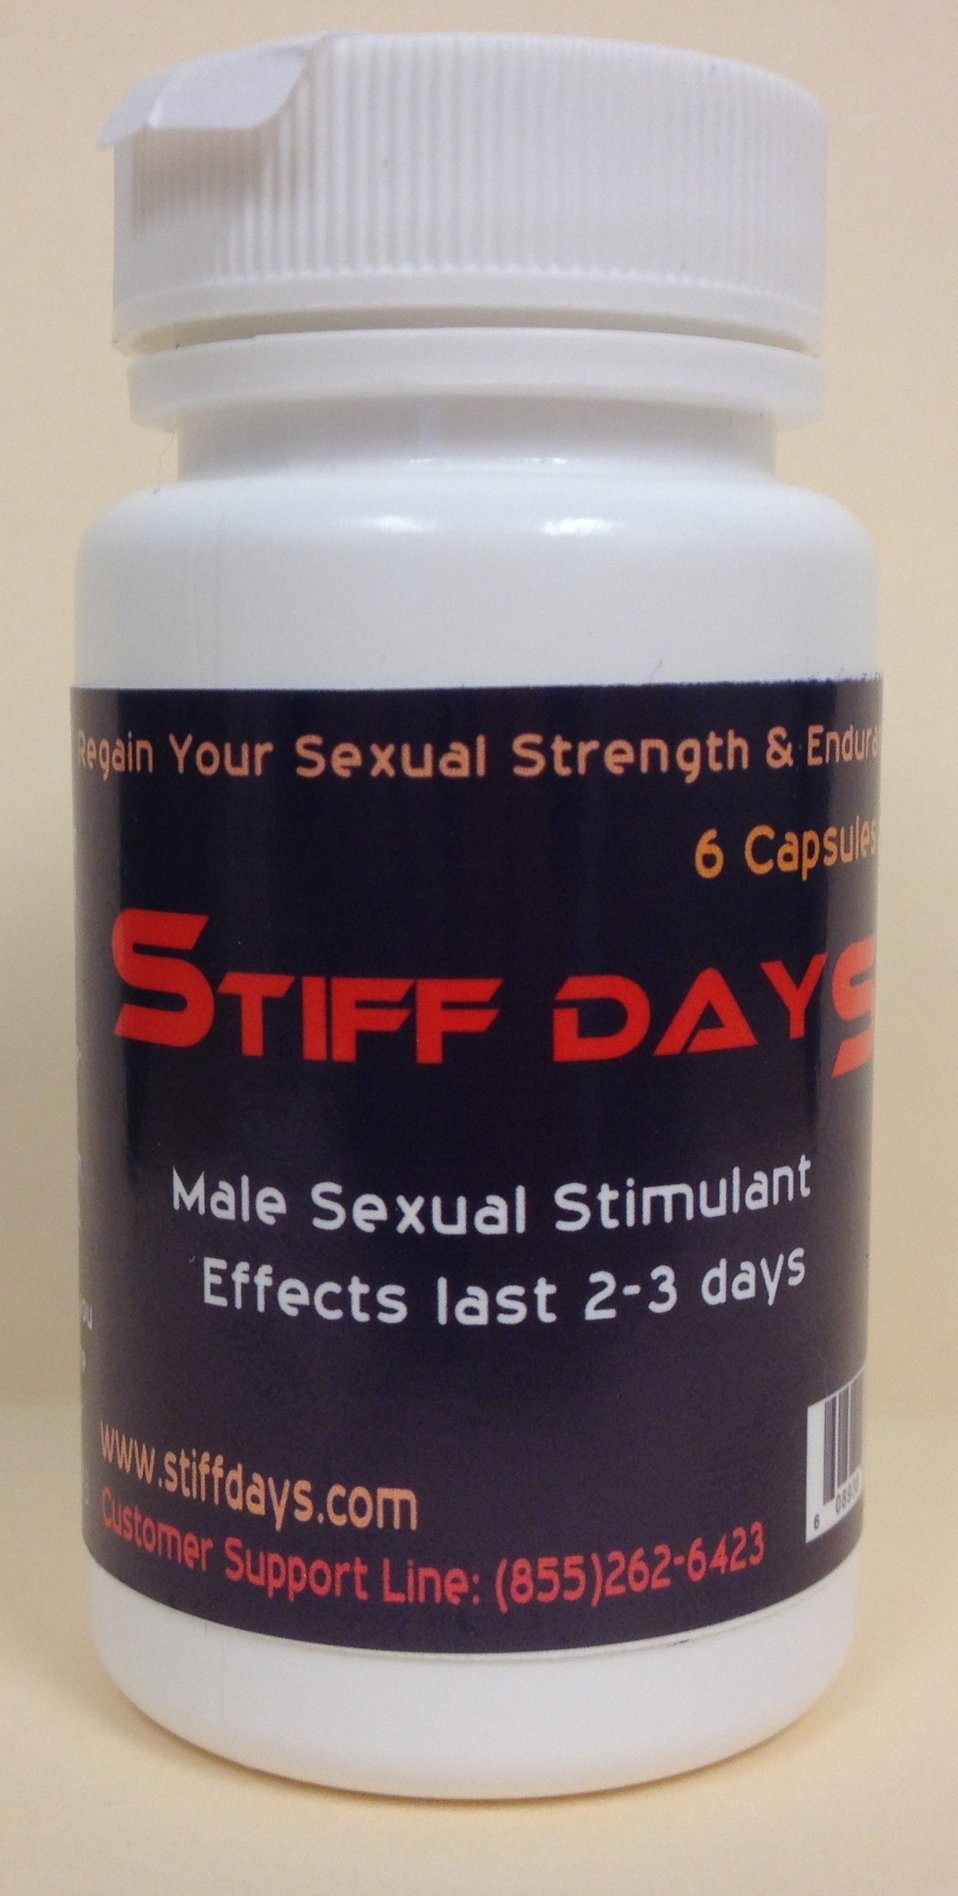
Stiff Days

March 21, 2013 - The FDA is advising consumers not to purchase or use 'Stiff Days,' a product promoted and sold for sexual enhancement. The product was found to contain undeclared sildenafil For more information, go to www.fda.gov/Drugs/ResourcesForYou/Consumers/BuyingUsingMe...

And read this Consumer Update: Beware of Fraudulent ‘Dietary Supplements’